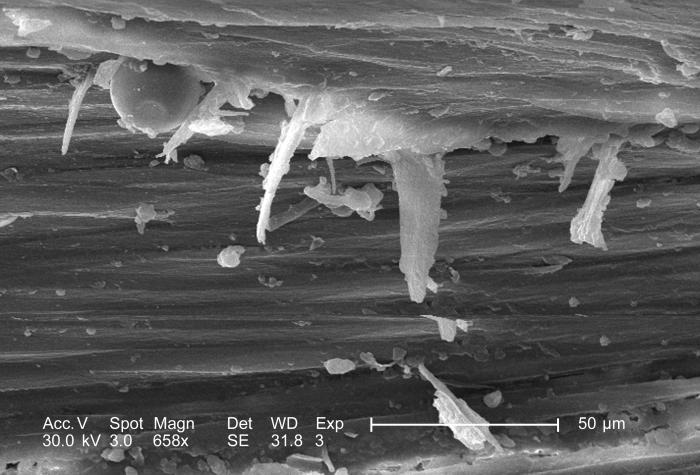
This highly magnified 2005 scanning electron micrograph (SEM) depicts the morphological characteristics seen on the surface of a domesticated cat's, Felis domesticus, claw; Magnified 658x. The cat's needle-sharp claws are highly specialized structures specifically designed for grasping prey, and assisting in exercises that demand a great degree of traction such as climbing trees, running, and even grooming. Its claws are retractable, which allows the animal to pull the structures back into the skin of its paws, thereby, reducing the degree of daily wear and tear. The irregularly shaped particulates include bits of foreign debris, and dead, sloughing keratinized cells, which are the building blocks that form the nail. This claw nail was found in the home of a cat owner after having been sloughed off of the paw of a house cat in the course of his everyday activities.